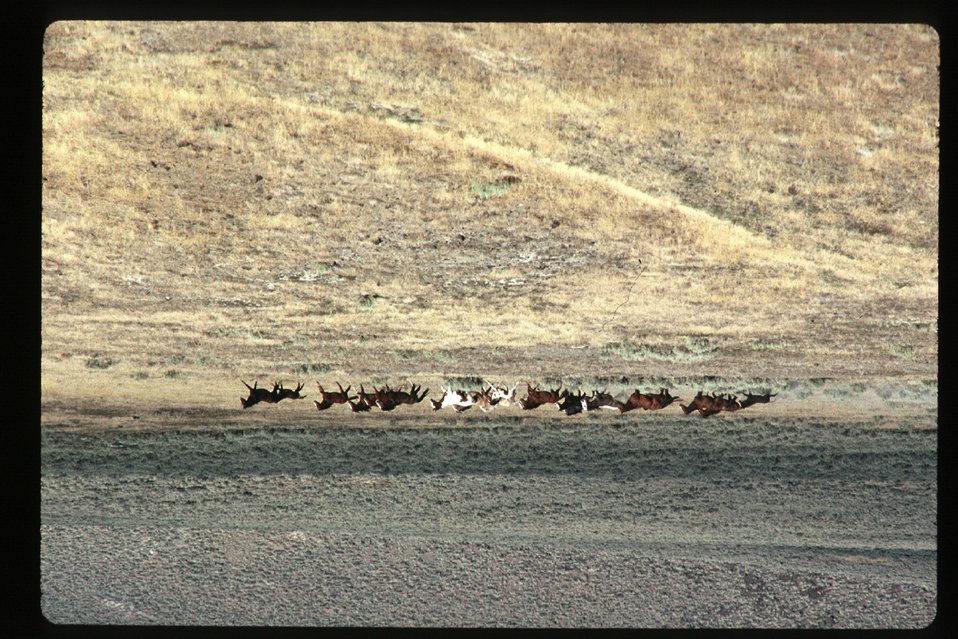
Wild horse roundup Wild Horse and Burro Adoption Program LSRD Lower Snake River District